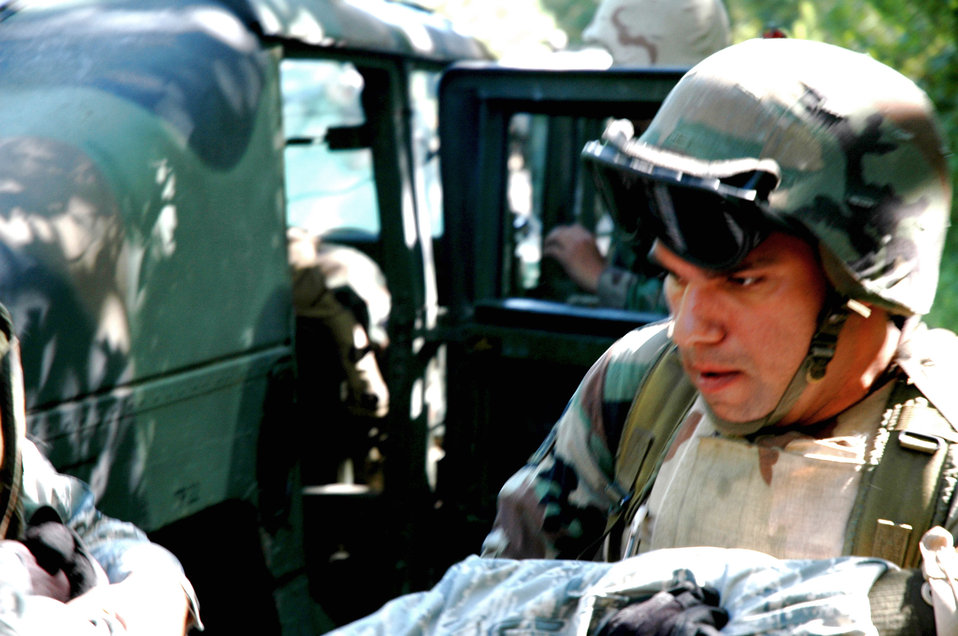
Immigrant Airman comes full circle

Senior Airman Bassel Noori participates in training for the Air Force Expeditionary Center's Advanced Contingency Skills Training Course Aug. 16 at Fort Dix, N.J. Airman Noori trained in the course prior to deploying to Iraq. He is from the 6th Mission Support Group at MacDill Air Force Base, Fla.